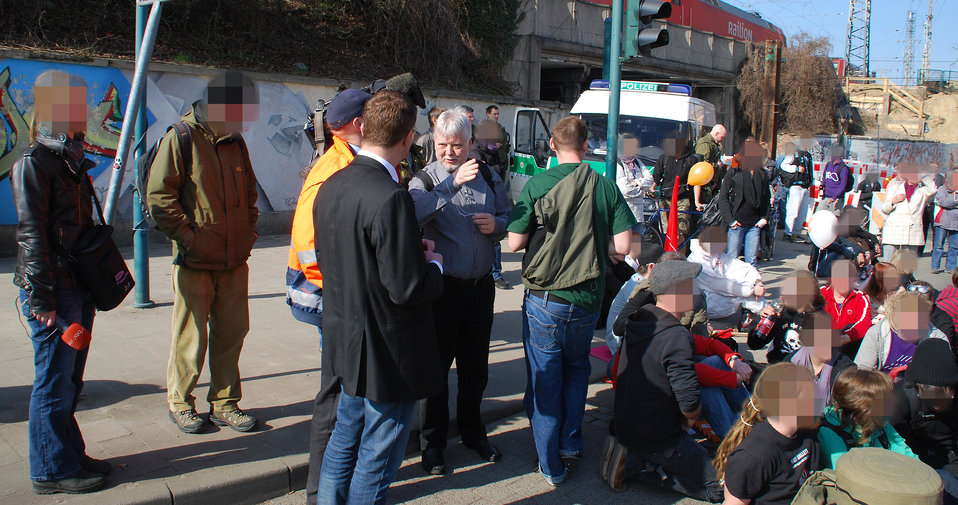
Proteste gegen den Nazi-Aufmarsch am 24.3.2012 in Frankfurt (Oder)